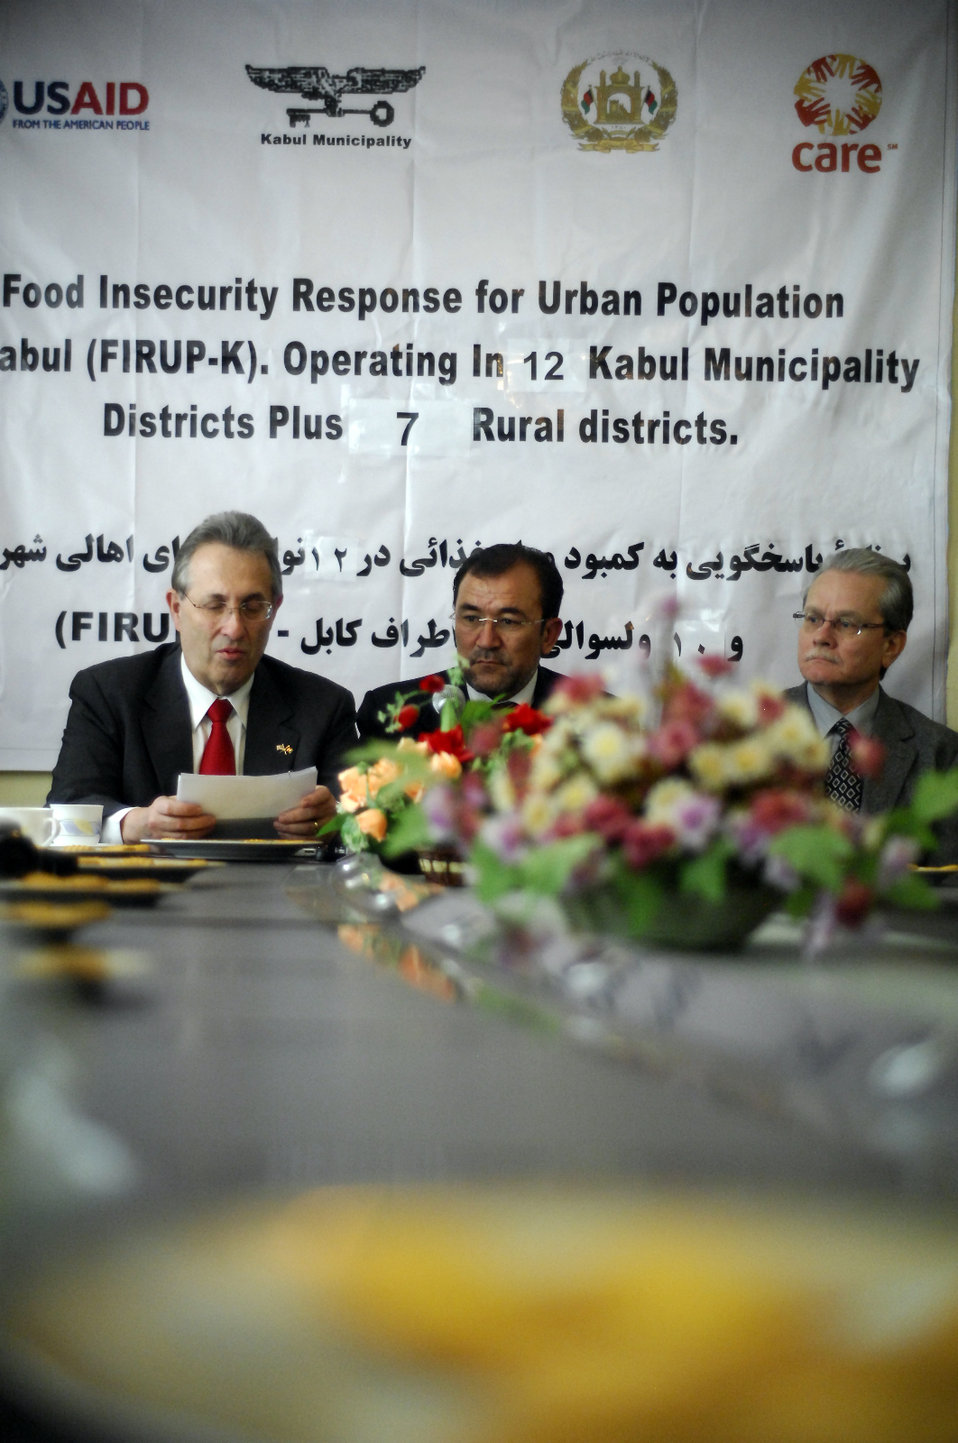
Care93 (1)